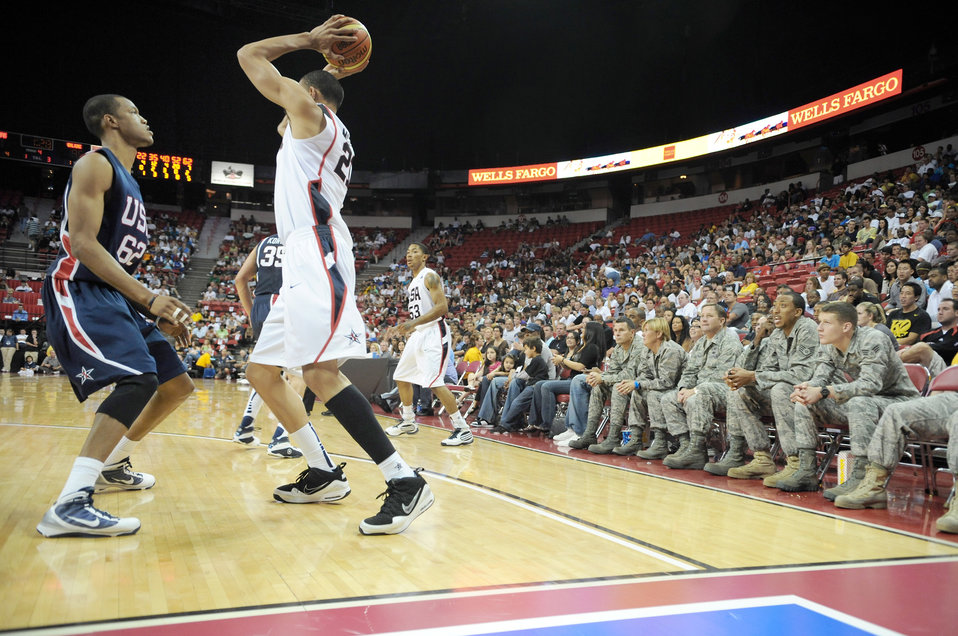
Nellis Airmen honored at USA Basketball exhibition

Airmen from Nellis Air Force Base, Nev., watch the action at the USA Basketball exhibition game July 25 at the Thomas and Mack Center in Las Vegas. Airmen who recently returned from Afghanistan and Iraq were honored and invited to enjoy the game courtside.